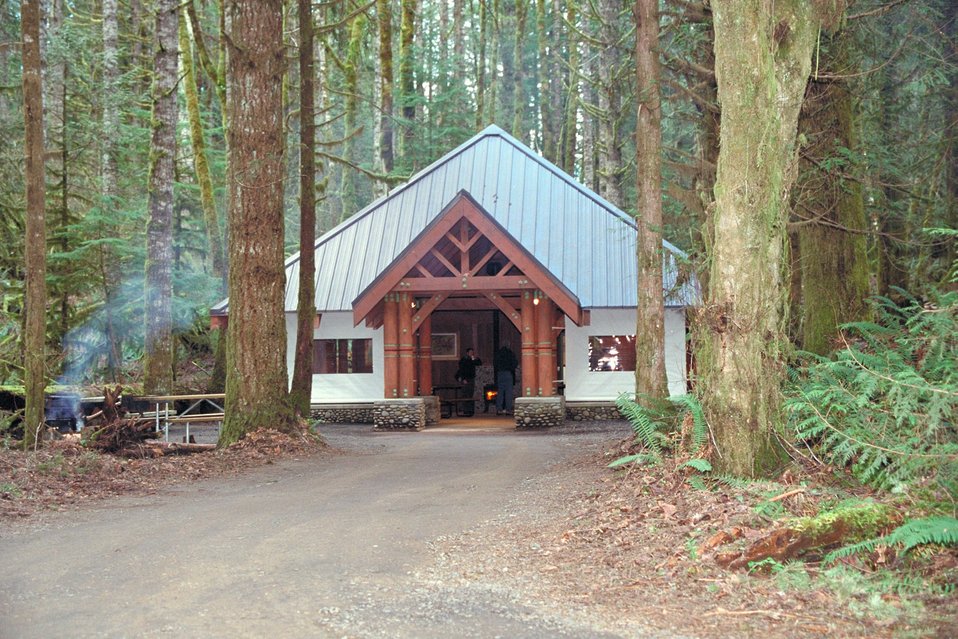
Cascade Stream Watch is an environmental education program conducted at BLM's Wildwood Recreation site.